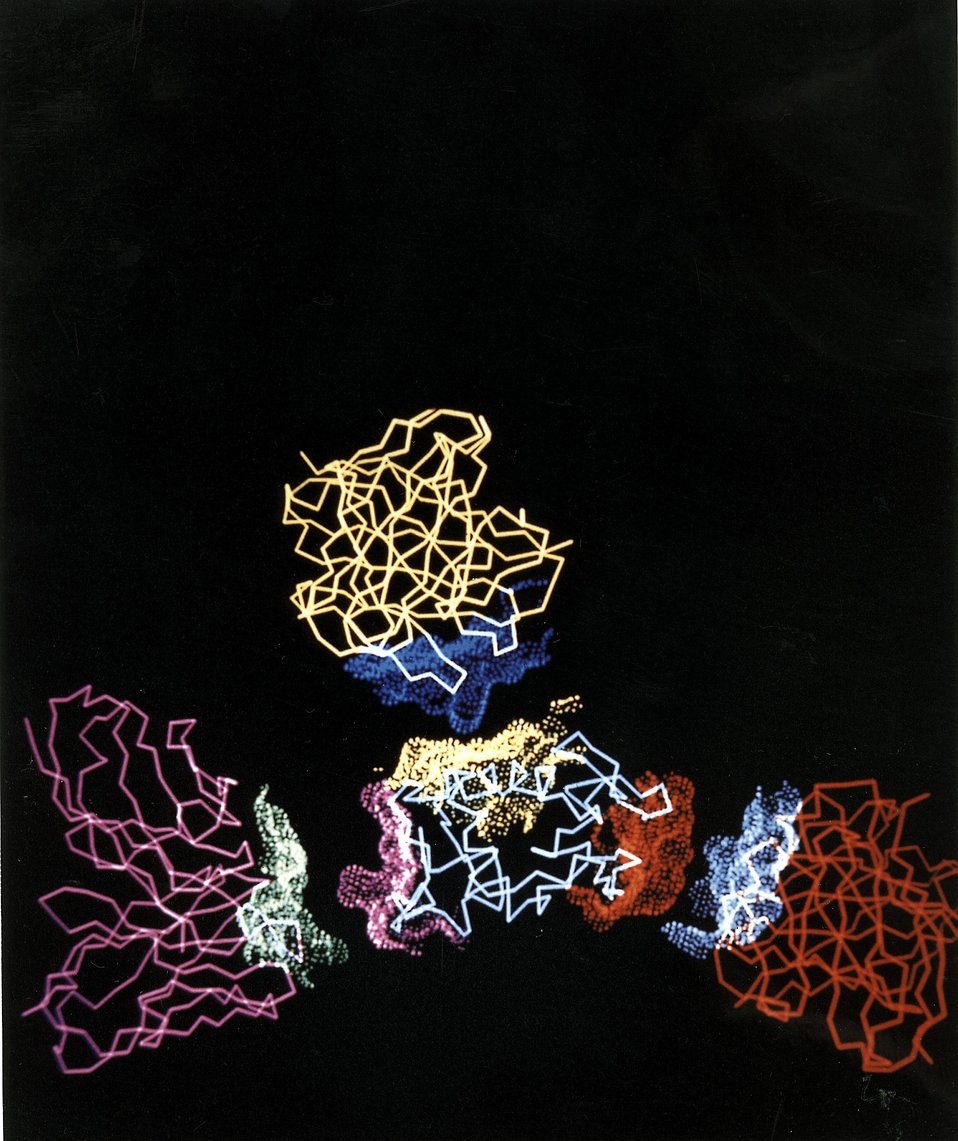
Details of the Body's Defense. Antibodies serve at the front line of the body's defense system. The antigen here is lysozyme, an enzyme found in egg whites. Shown are a single lysozyme molecule (blue) and portions of three different antibodies from mouse (red, yellow, and violet).